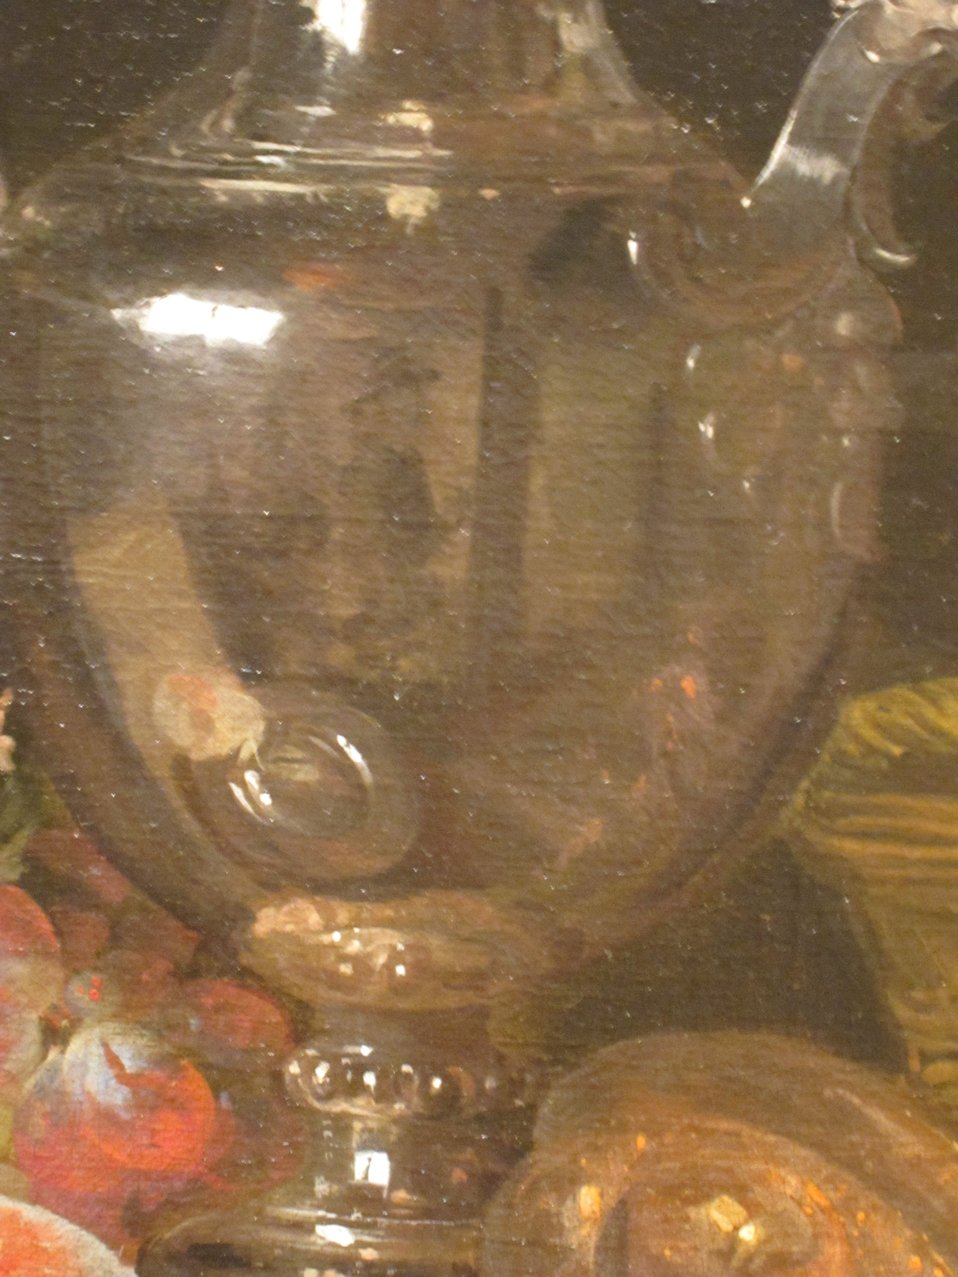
'Silver Wine Jug, Ham, and Fruit' by Abraham van Beyeren, detail showing artist's reflection